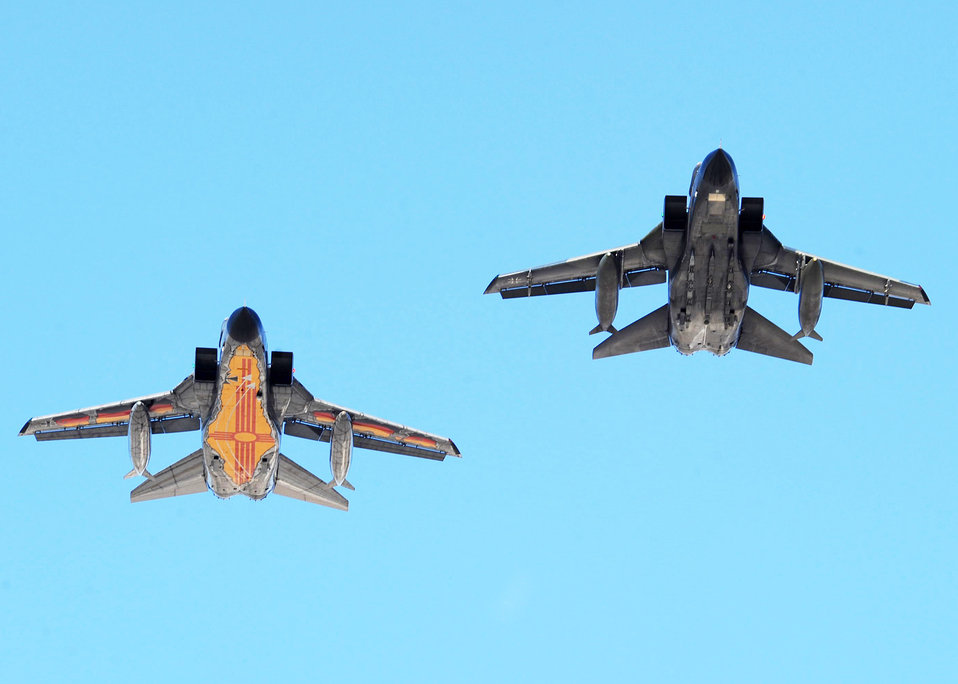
GAF FTC commemorates 55,555 flight hours

Two German Tornados, one specially painted to commemorate the event, fly over the German air force Flying Training Center at Holloman Air Force Base, N.M. Oct. 13, 2009, on the way to achieving the 55,555th flight hourin a Tornado. Col. Peter Klement, German air force Flying Training Center commander and Col. Jeff Harrigian, 49th Fighter Wing commander, were flying the painted Tornado.